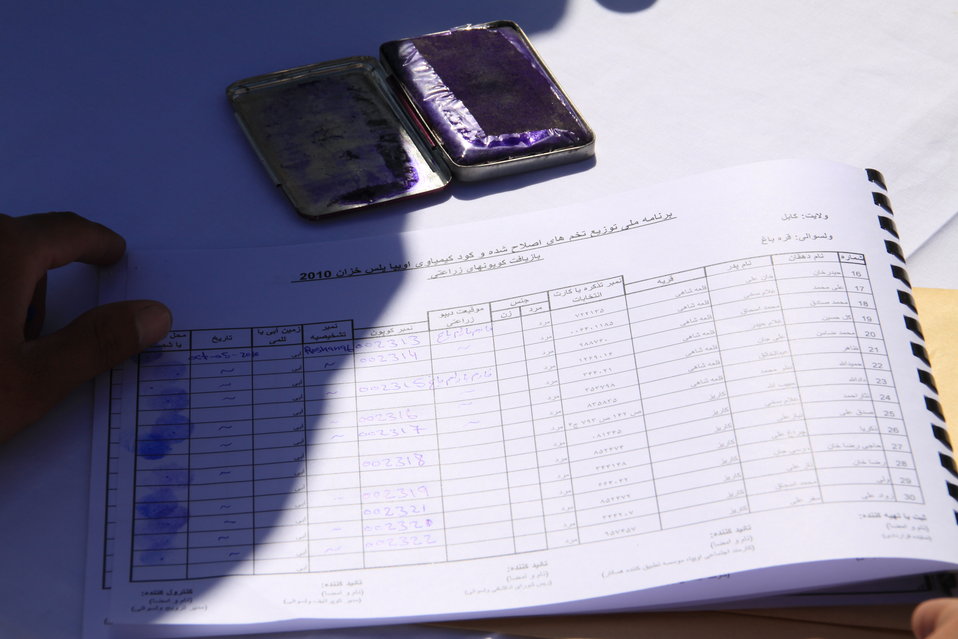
AVIPA Plus Wheat Seed Distribution 101005

US Ambassador Karl Eikenberry and USAID Acting Mission Director Kevin Brownawell joined the Minister of Agriculture, Irrigation and Livestock, H.E. Minister Mohammed Rahimi in signing a Memorandum of Understanding and distributing vouchers to area farmers for wheat and fertilizer.

US Ambassador Karl Eikenberry and USAID Acting Mission Director Kevin Brownawell joined the Minister of Agriculture, Irrigation and Livestock, H.E. Minister Mohammed Rahimi in signing a Memorandum of Understanding and distributing vouchers to area farmers for wheat and fertilizer.

US Ambassador Karl Eikenberry and USAID Acting Mission Director Kevin Brownawell joined the Minister of Agriculture, Irrigation and Livestock, H.E. Minister Mohammed Rahimi in signing a Memorandum of Understanding and distributing vouchers to area farmers for wheat and fertilizer.